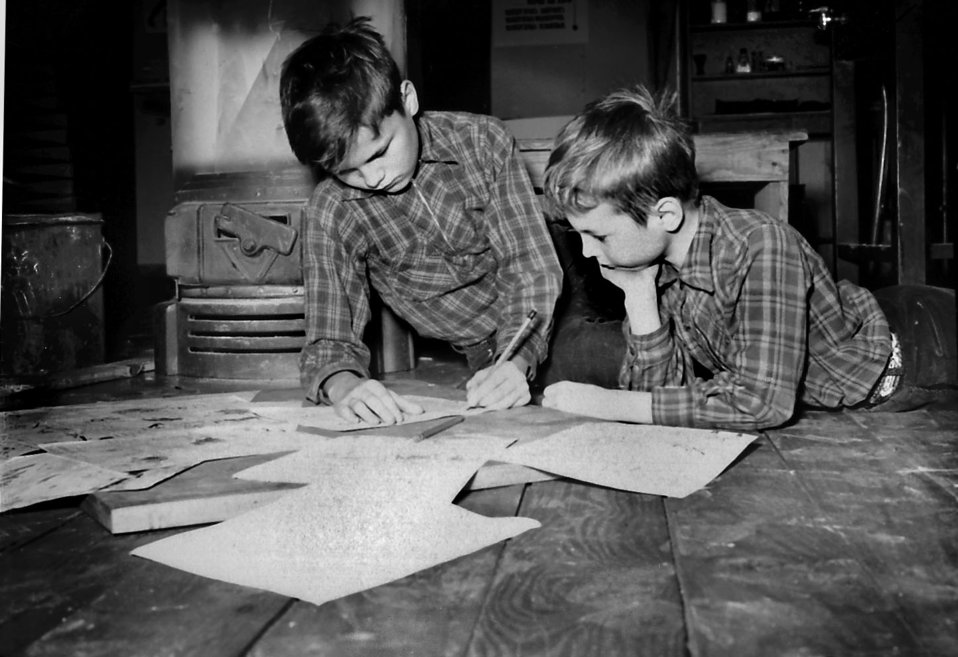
Home Work on the Floor Oak Ridge

263 DOE photo Ed Westcott Oak Ridge Tennessee